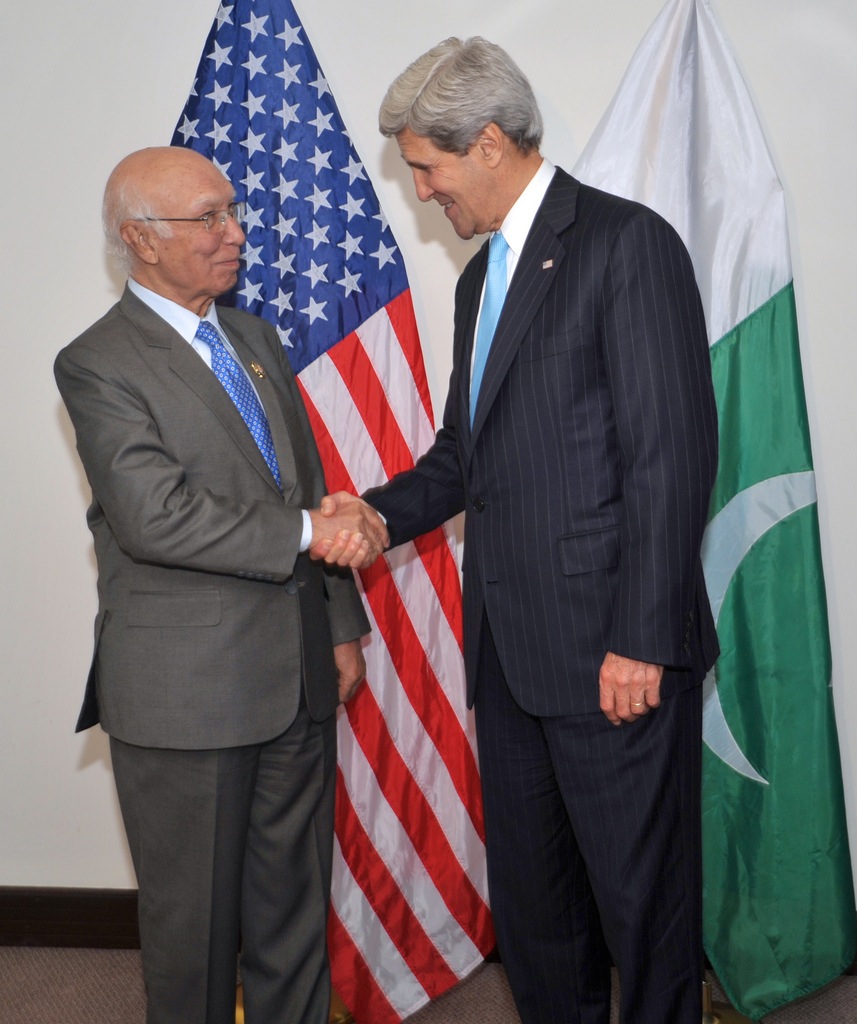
Secretary Kerry Meets With Pakistani Advisor to the Prime Minister Aziz

U.S. Secretary of State John Kerry greets Pakistani Advisor to the Prime Minister for National Security and Foreign Affairs Sartaj Aziz before a bilateral meeting in Bander Seri Begawan, Brunei, on July 2, 2013.